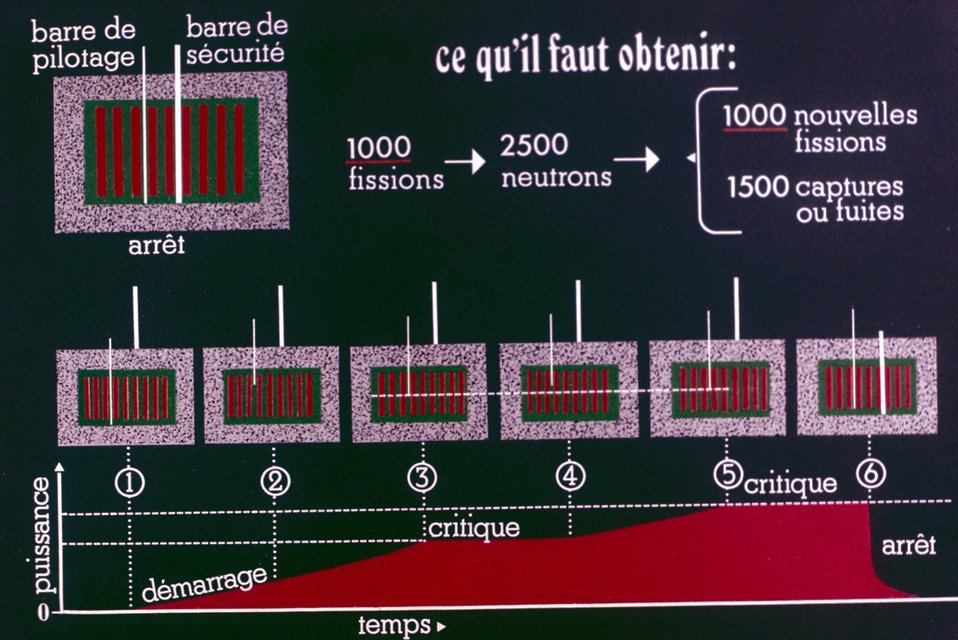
Le r«le des barres de contr«le.